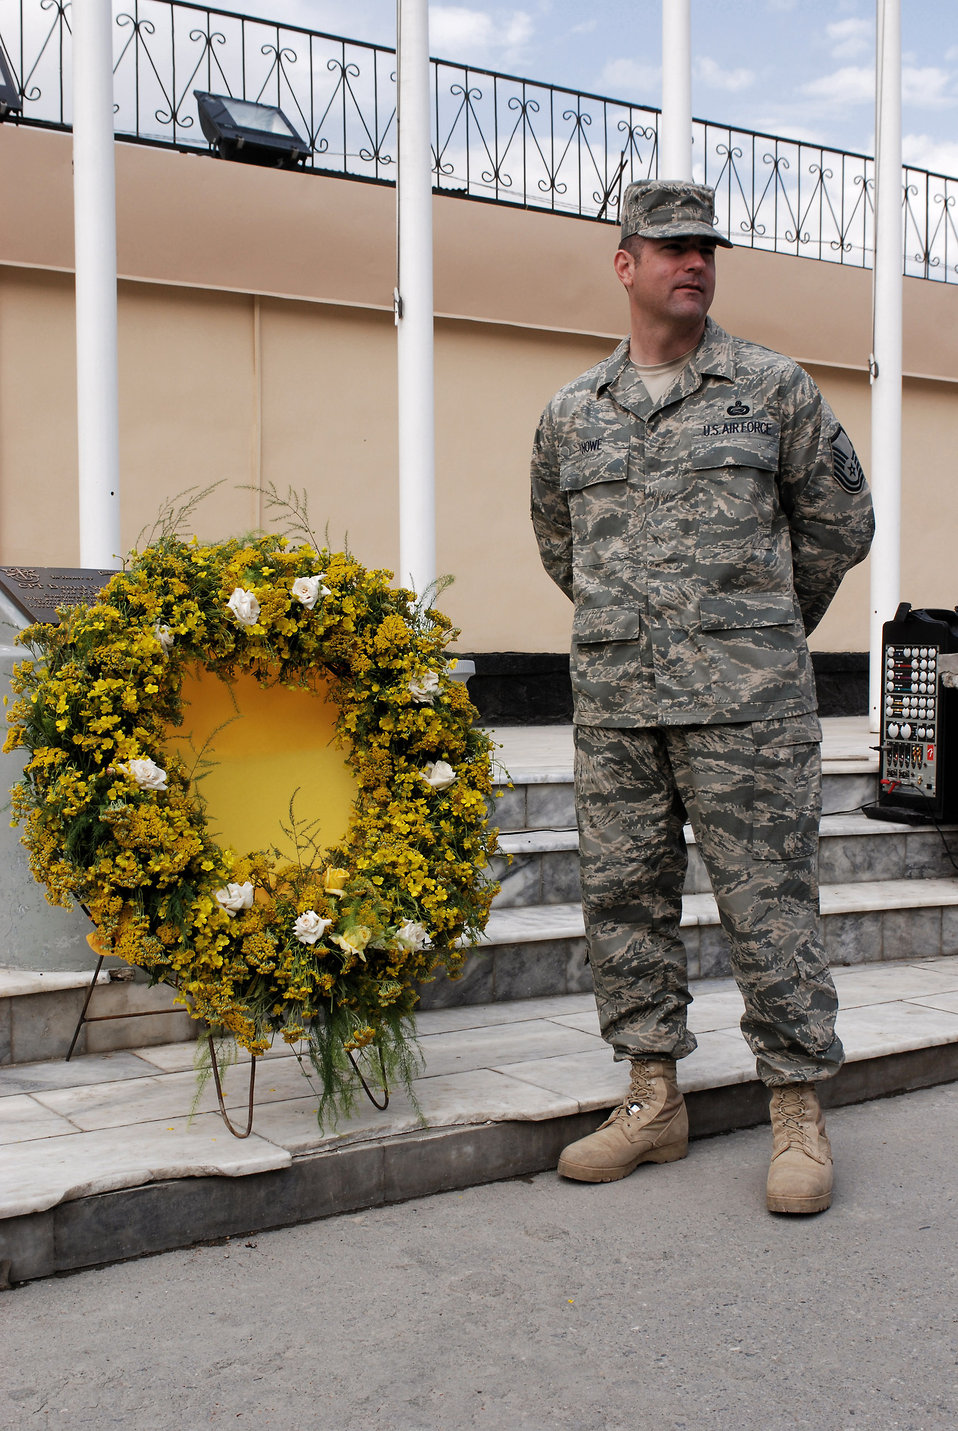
Deployed servicemembers honor fallen heroes

Master Sgt. John Howe, Combined Security Transition Command-Afghanistan personnel sergeant, stands next to a wreath displayed for a Memorial Day ceremony May 26 at Camp Eggers in Kabul, Afghanistan. Sergeant Howe, deployed from Elemendorf Air Force Base, Alaska, narrated the event.